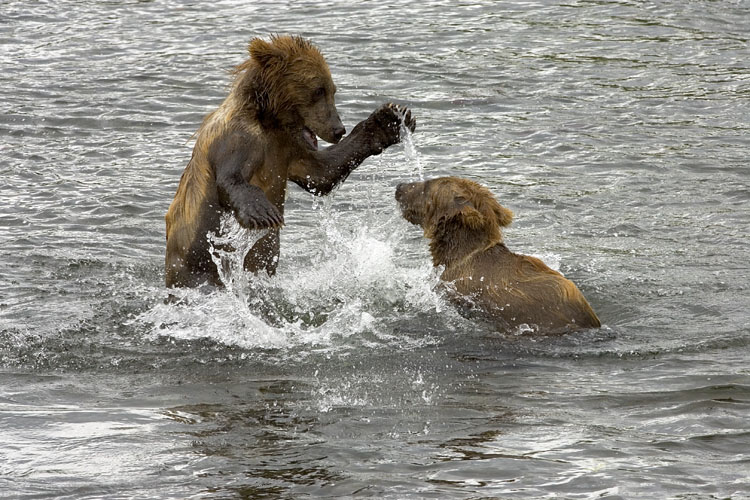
Kodiak Brown Bears

Playful Kodiak Bears